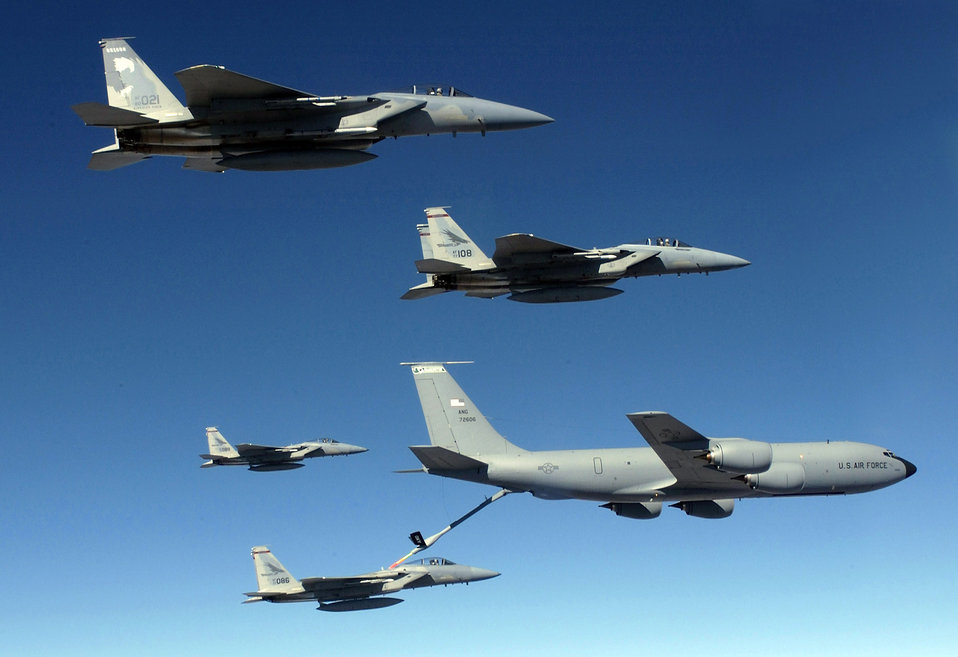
Air mobility maintains the fight in Afghanistan

A KC-135 Stratotanker aircrew refuels four F-15 Eagles over Afghanistan. In 2008, Air Force tankers passed more than 1 billion gallons of gas to coalition aircraft.